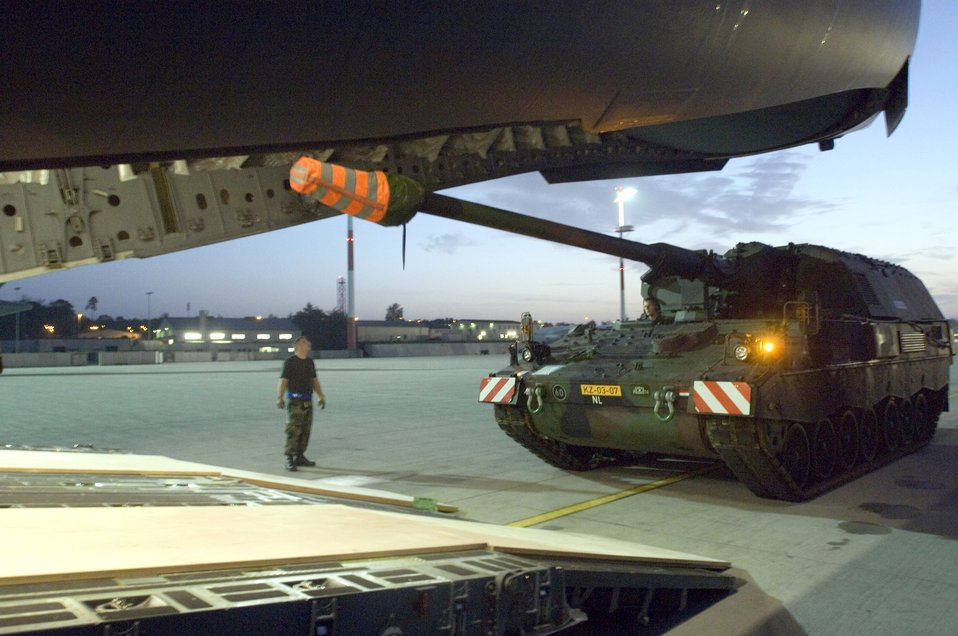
Howitzer takes flight

A Netherlander Howitzer 2000 is driven onto a C-17 Globemaster III at Ramstein Air Base, Germany, Sept. 6. The 60-ton tank will be flown to Afghanistan on board a C-17 from Charleston Air Force Base, S.C.